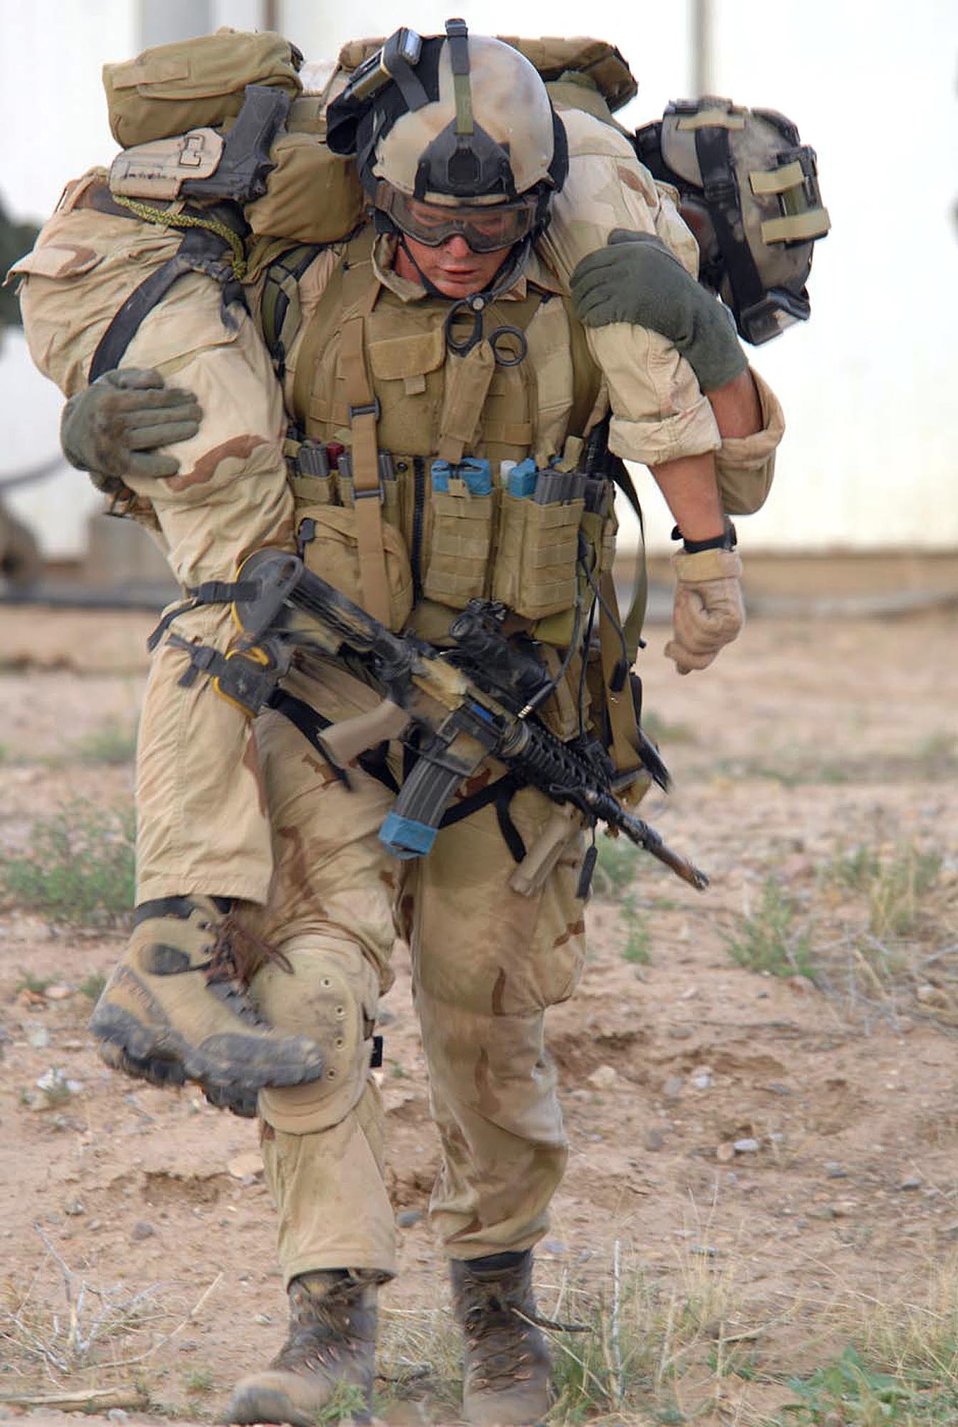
Staying together

Senior Airman Dwight Funk carries a